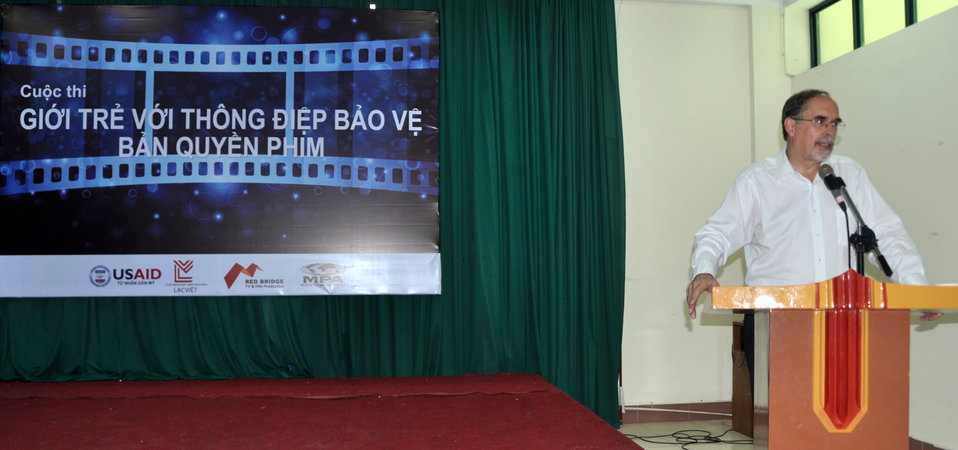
USAID supports scriptwriting contest for students in Hanoi to boost intellectual property rights awareness